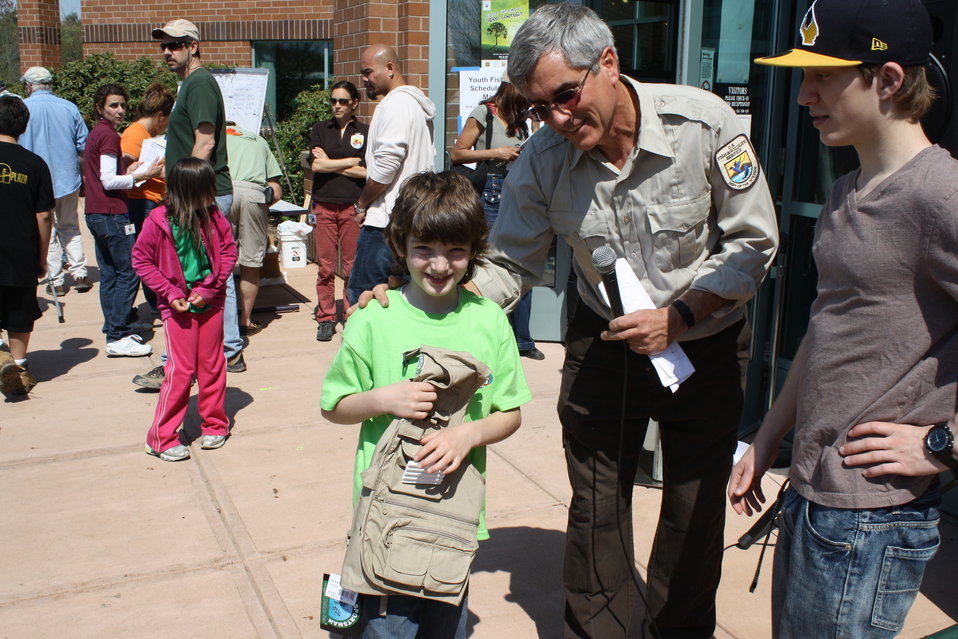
3rd prize middle!

A winner at the USFWS fishing derby in Hadley, MA on May 7th.